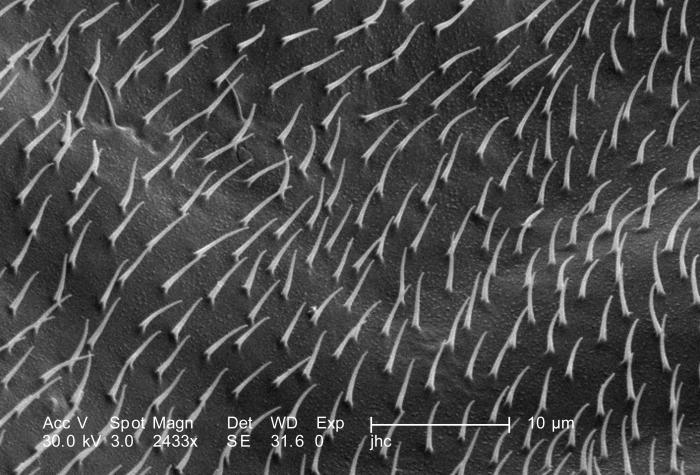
At a much higher magnification, 2433X, than PHIL 9908, this scanning electron micrograph (SEM) depicted some of the morphologic details found on the wing surface of an unidentified 1/4"-sized black flying insect with a small red mark on its dorsum, discovered in the suburbs of Decatur, Georgia. As a member of the Phylum Arthropoda, i.e., Arthro = 'jointed', and poda 'leg', this insect sported three pairs of jointed legs, which placed it into the Family, Insecta>.